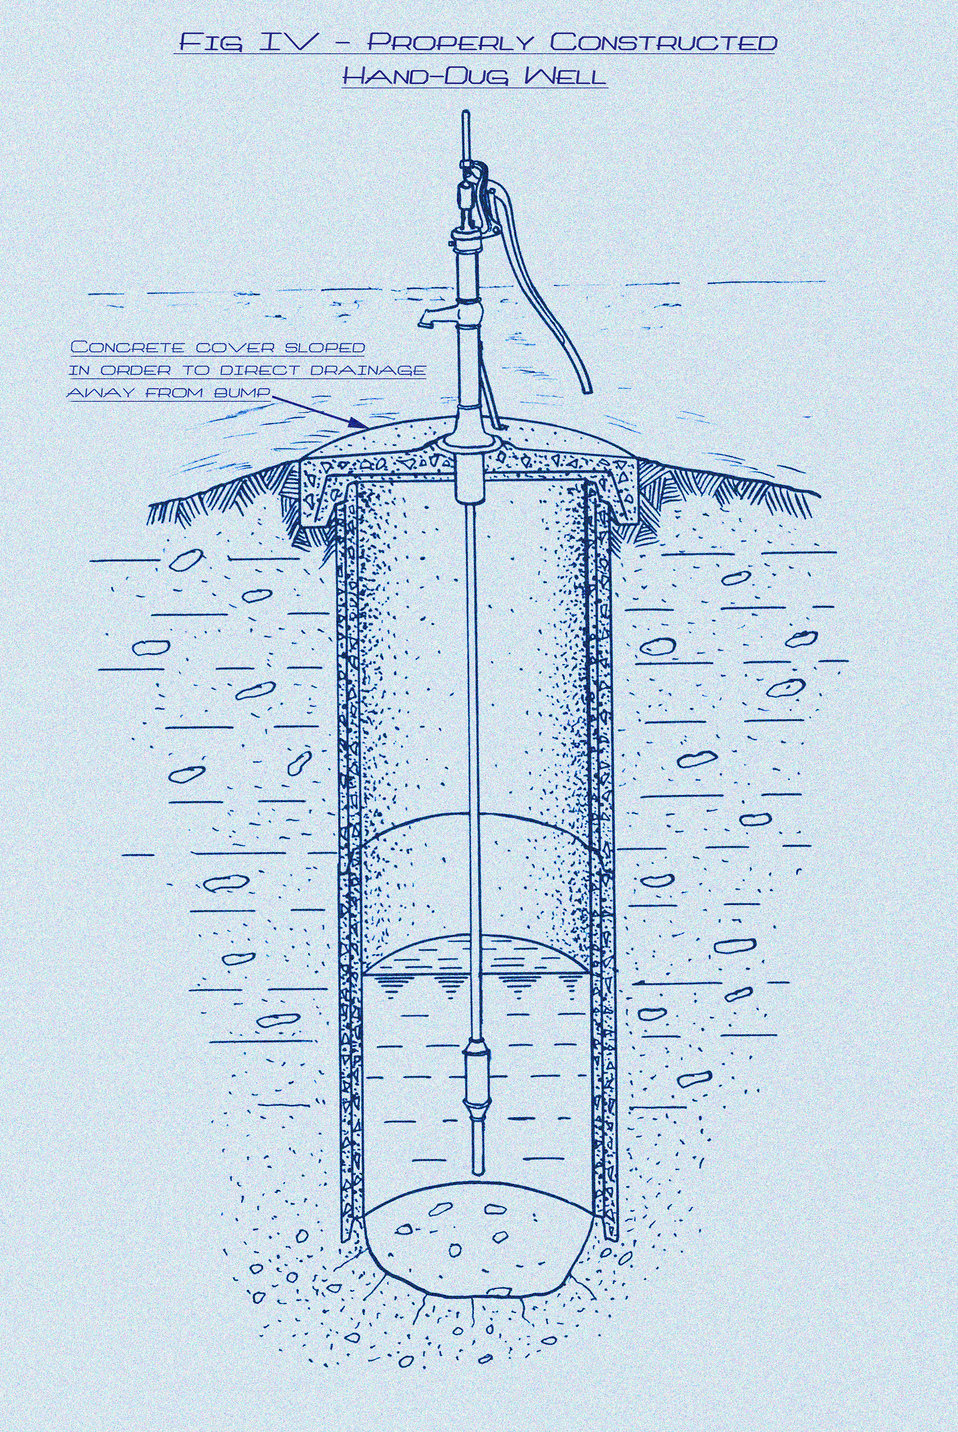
This historic diagram, which had been digitally enhanced and colorized, depicted an example of a properly constructed 'dug' type well, showing how a concrete cover was sloped in order to drain contaminated water away from the pump. Published in 1928, this was one of a series of instructional drawings used by the Minnesota Board of Health to train the state's public health workers.